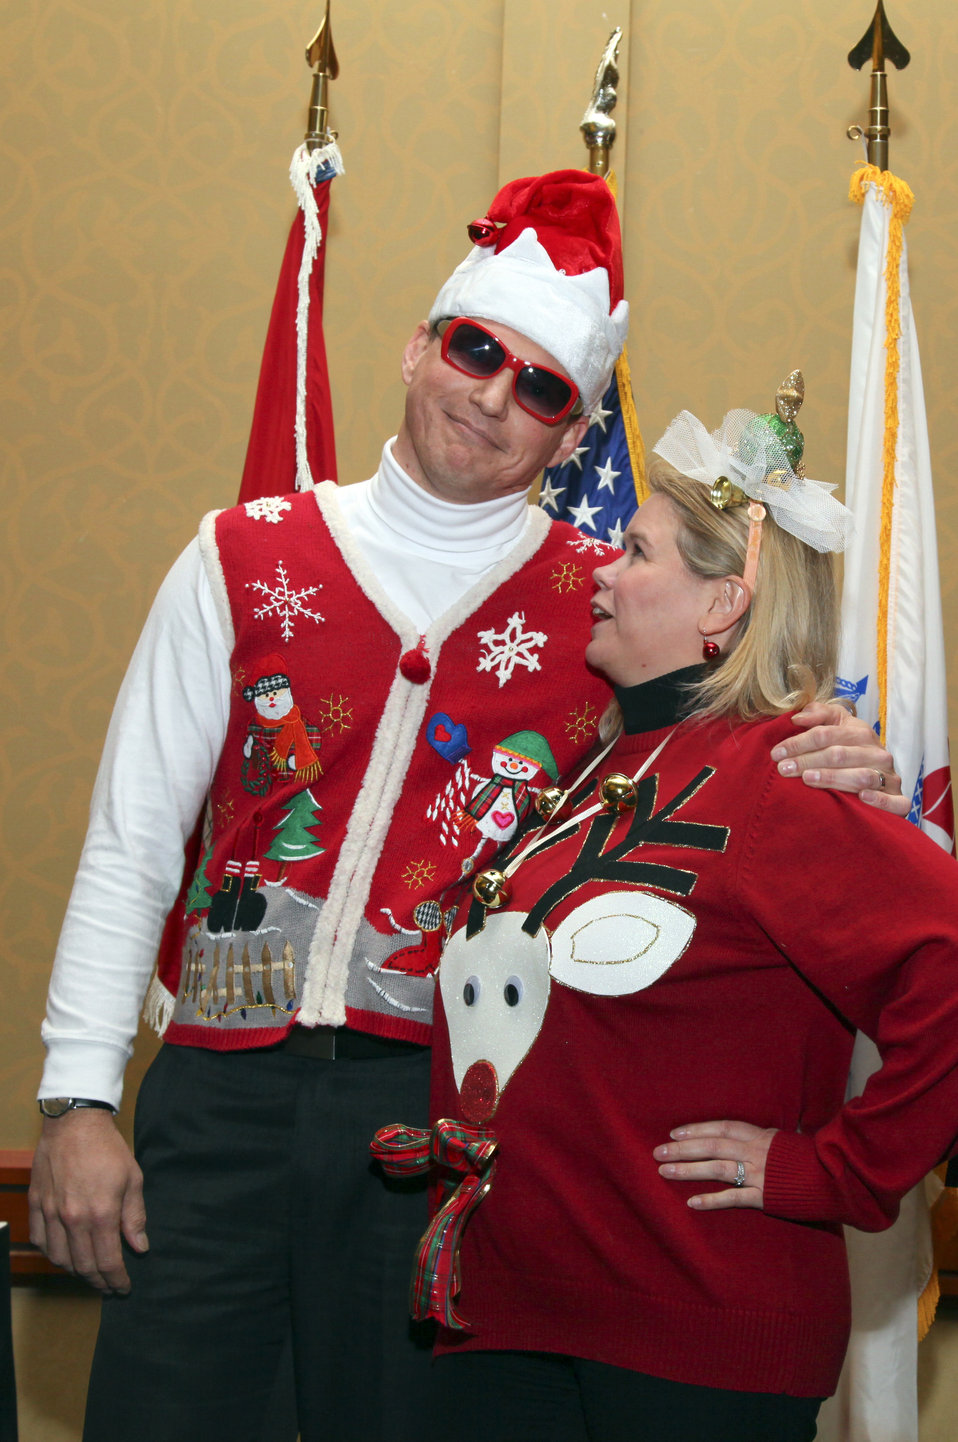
Sacramento District celebrates the holidays

Mike Jewell (left), chief of the regulatory division, poses for a photograph with Kristina Mullins, deputy district engineer for programs and project management, after winning the contest for the ugliest sweater during the U.S. Army Corps of Engineers Sacramento District’s annual holiday party in Sacramento, Calif., Dec. 16. Besides the ugliest holiday sweater contest, entertainment included a special performance by “Festive Folk,” a holiday video presentation and a holiday basket auction. The event also included years of service award presentations to employees by district commander Col. Bill Leady.